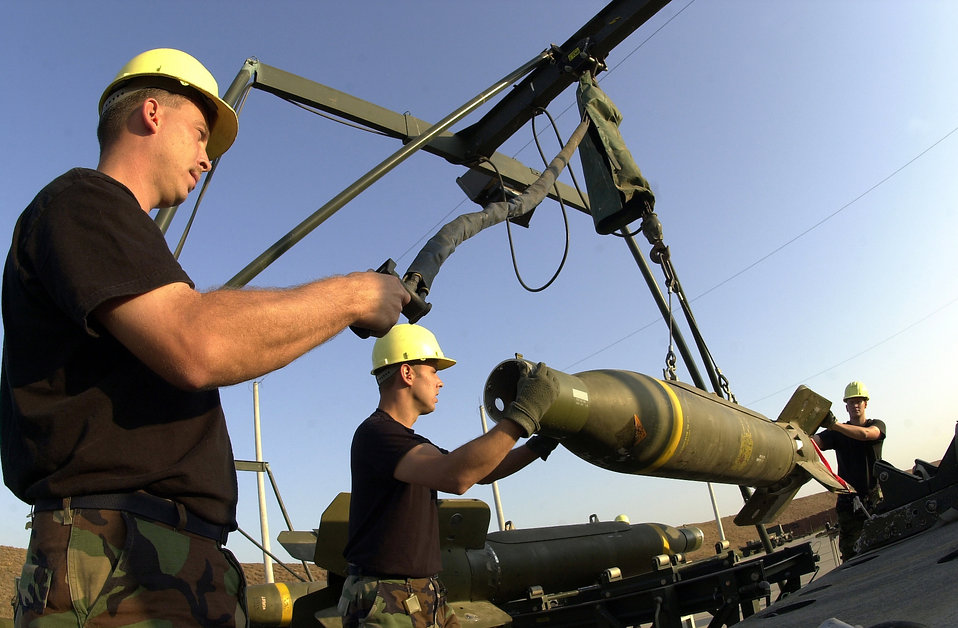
GBU-24

INCIRLIK AIR BASE, Turkey -- Tech. Sgt. Glenn Swaerengin, Staff Sgt. William Harford and Staff Sgt. Jason Harre all deployed to the 39th Maintenance Squadron munitions flight at Incirlik, upload a GBU-24 from a munitions assembly conveyor to a munitions trailer for transport to the flightline.